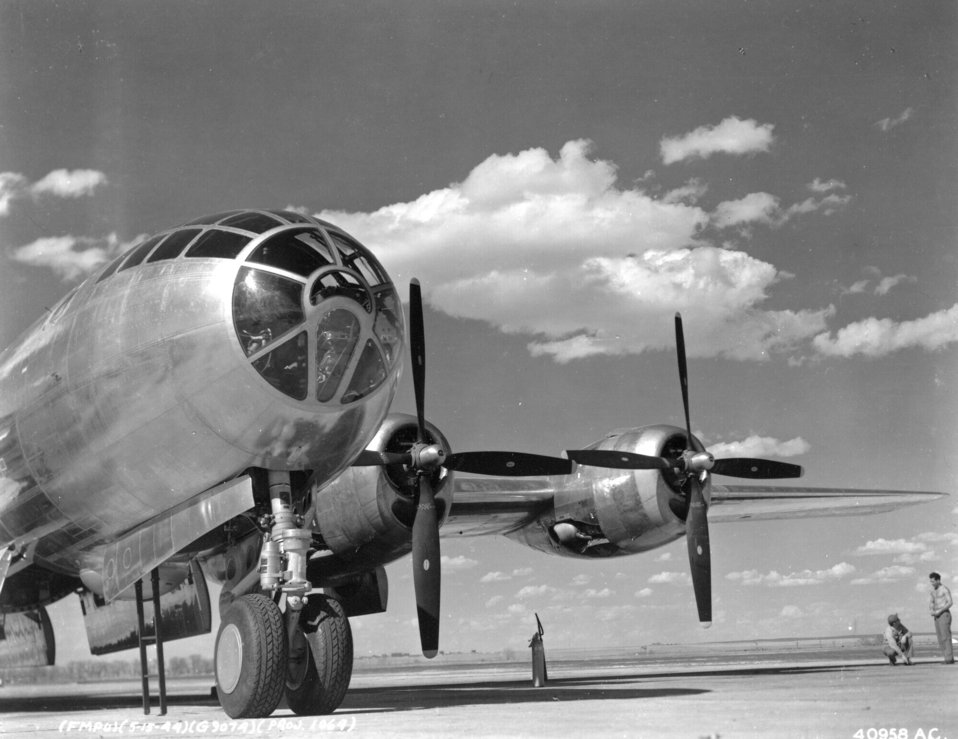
B-29

1940's -- B-29